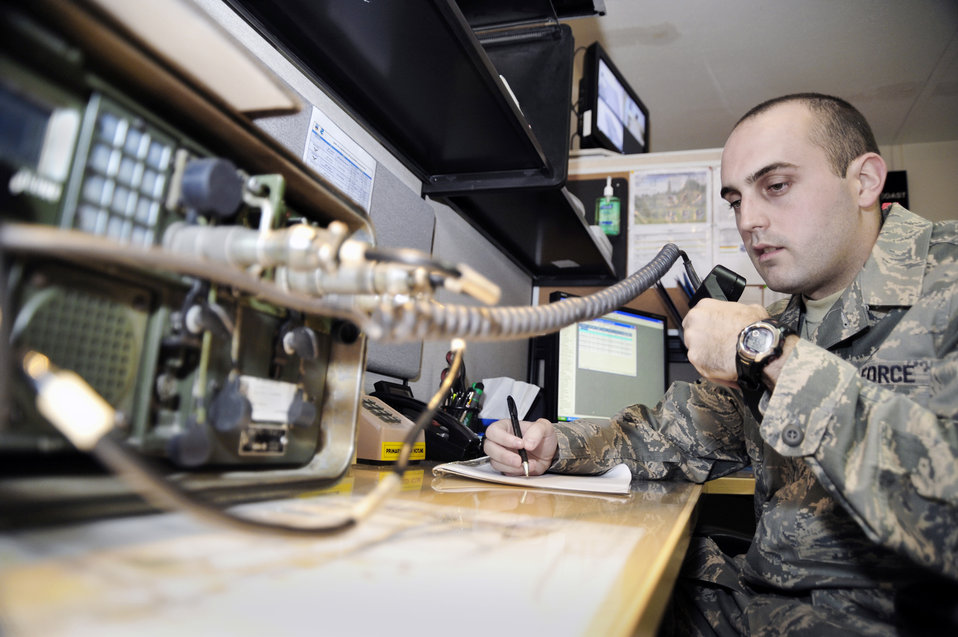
Talk to me

Staff Sgt. Sebastian Manna communicates with air crews while on duty in the command post Sept. 10, 2009, at an air base in Southwest Asia. Sergeant Manna is with the 380th Air Expeditionary Wing and deployed from Ramstein Air Base, Germany. He grew up in Buenos Aires, Argentina.